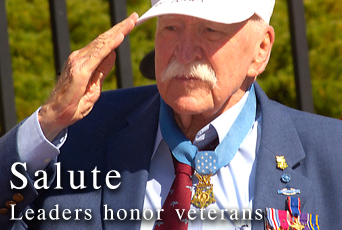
Salute

Military leaders honor veterans